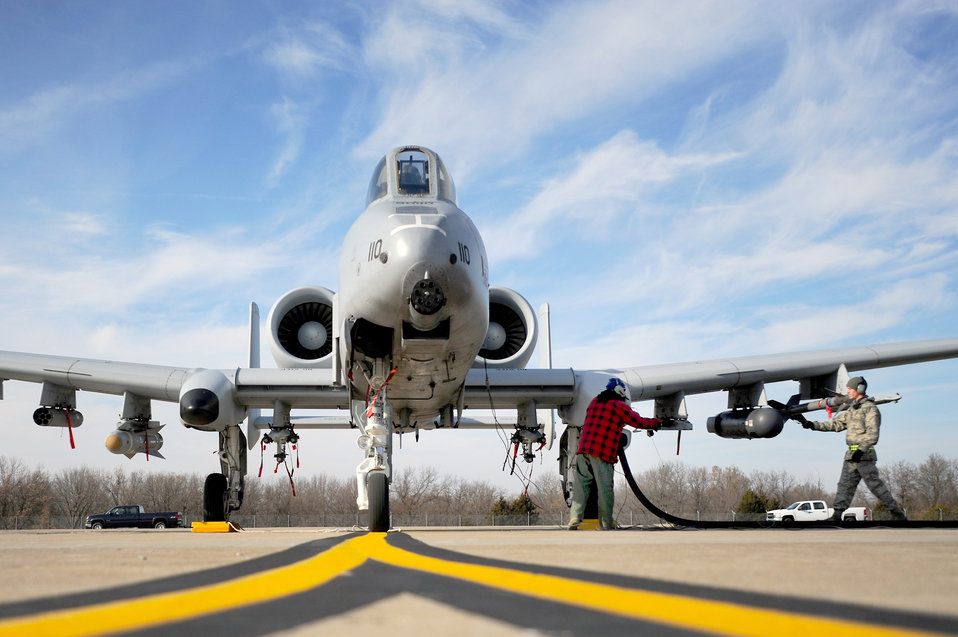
Hot pit refueling

Dewayne Magnuson and Senior Airman James White work together to perform a hot pit refuel on an A-10 Thunderbolt II Dec. 8, 2010, at Whiteman Air Force Base, Mo. The Air Force Reserve Command's 442nd Fighter Wing crews are practicing this procedure to keep their skills sharp. Mr Magnuson is an air reserve technician with the 442nd FW and Airman White is a fuels operator with the 509th Logistics Readiness Squadron.